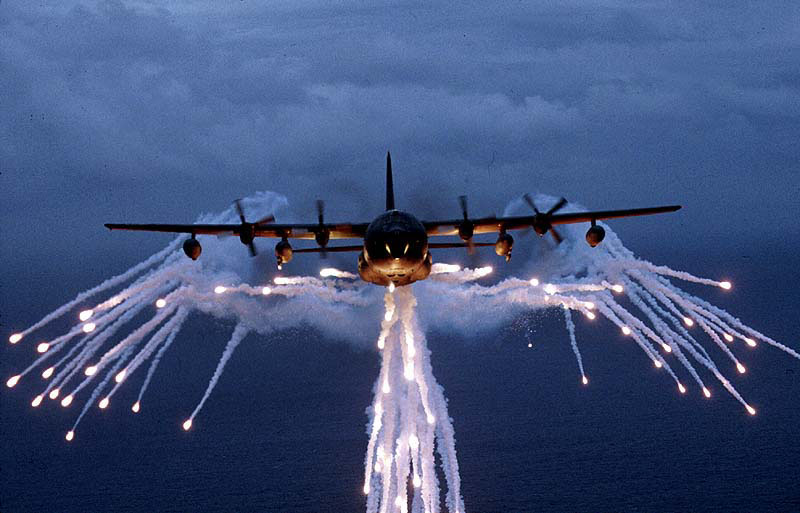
Light show!

FILE PHOTO -- The mission of the MC-130E Combat Talon I and MC-130H Combat Talon II is to provide global, day, night and adverse weather capability to airdrop and airland personnel and equipment in support of U.S. and allied special operations forces. The MC-130E also has a deep penetrating helicopter refueling role during special operations missions. These aircraft are equipped with in-flight refueling equipment, terrain-following, terrain-avoidance radar, an inertial and global positioning satellite navigation system, and a high-speed aerial delivery system. The special navigation and aerial delivery systems are used to locate small drop zones and deliver people or equipment with greater accuracy and at higher speeds than possible with a standard C-130. The aircraft is able to penetrate hostile airspace at low altitudes and crews are specially trained in night and adverse weather operations.